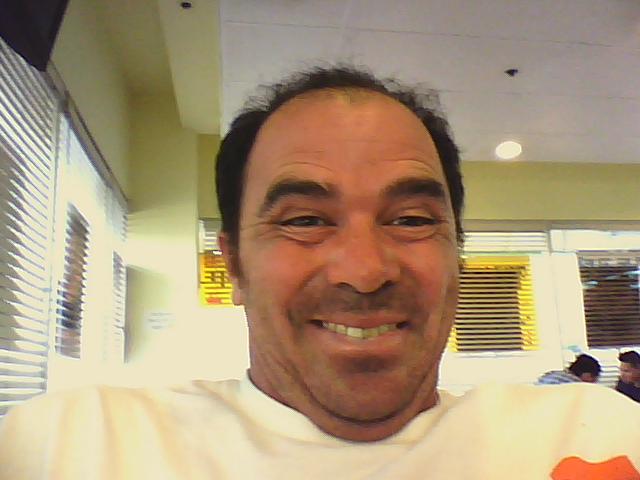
This is the one behind the world of 'Gumdroplou'